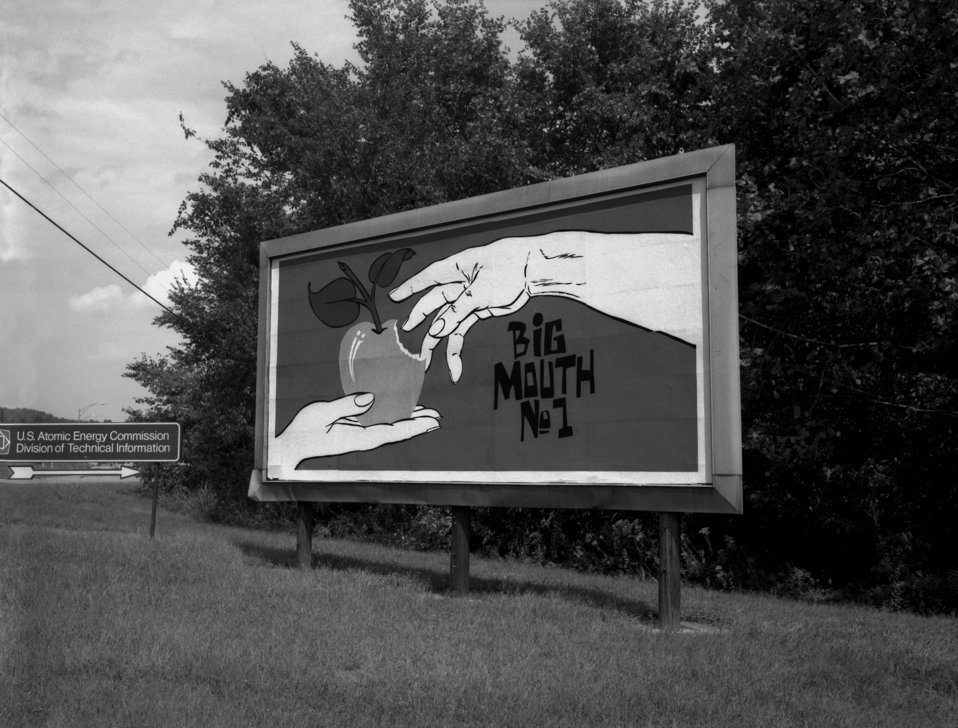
HoffmanSecurity Bill Board Elsa Gate Oak Ridge

70-274 DOE photo Frank Hoffman Security Bill Board Elsa Gate Oak Ridge Tennessee 10-5-1970